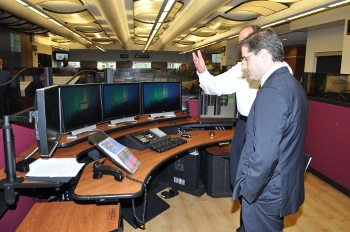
Chairman at next gen

Next Generation 9-1-1; Arlington, VA. November 23, 2010